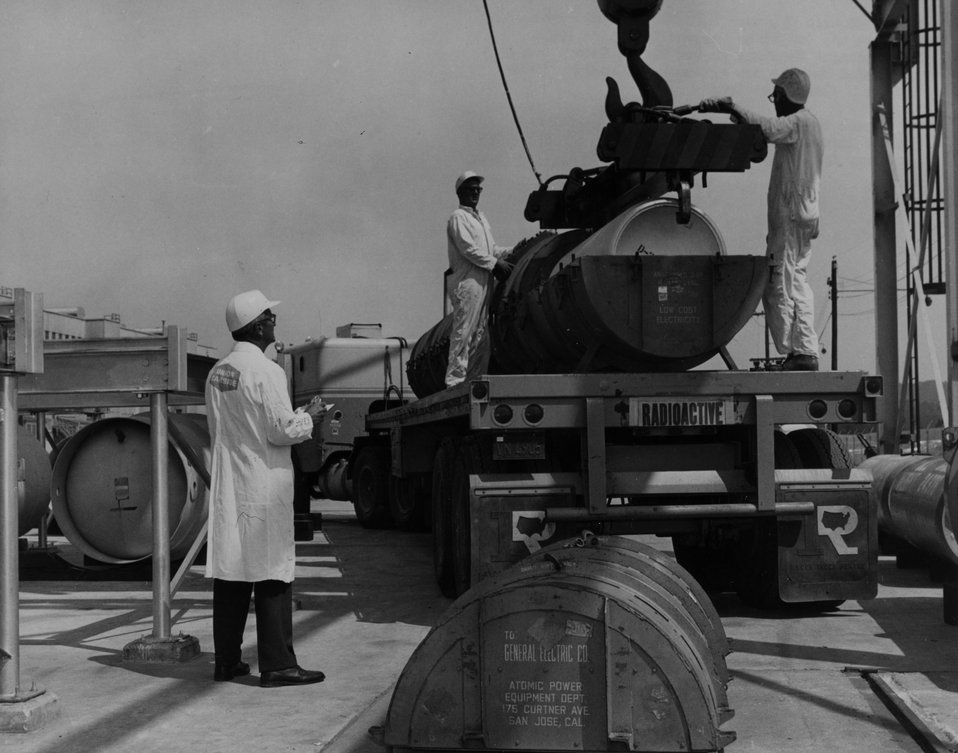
Customer Product Cylinder being loaded into Protective Package at the Oak Ridge Gaseous Diffusion Plant Toll Enrichment Facility in Oak Ridge, Tennessee. c. 1972